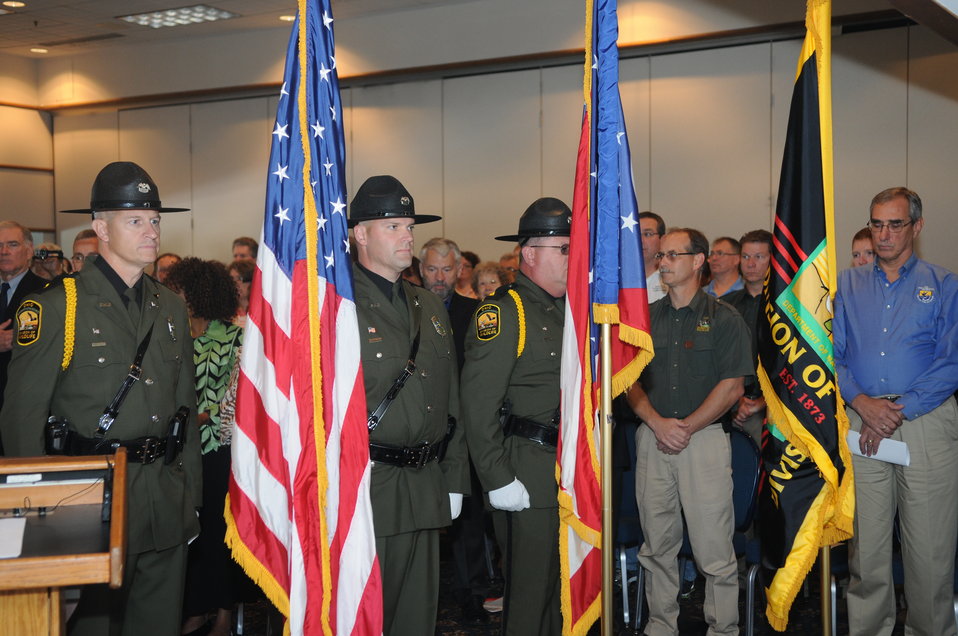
Ohio Division of Wildlife Color Guard during national anthem